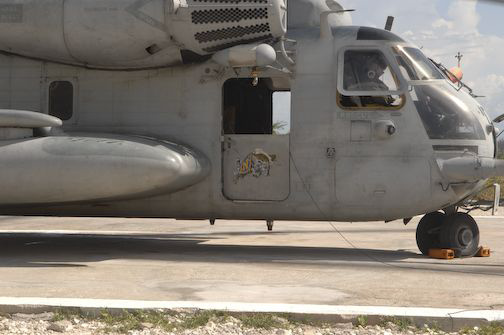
This image depicts a U.S. Navy helicopter engaged in the delivery of emergency food supplies to remote villages in Haiti in 2008 after two hurricanes had hit the island.